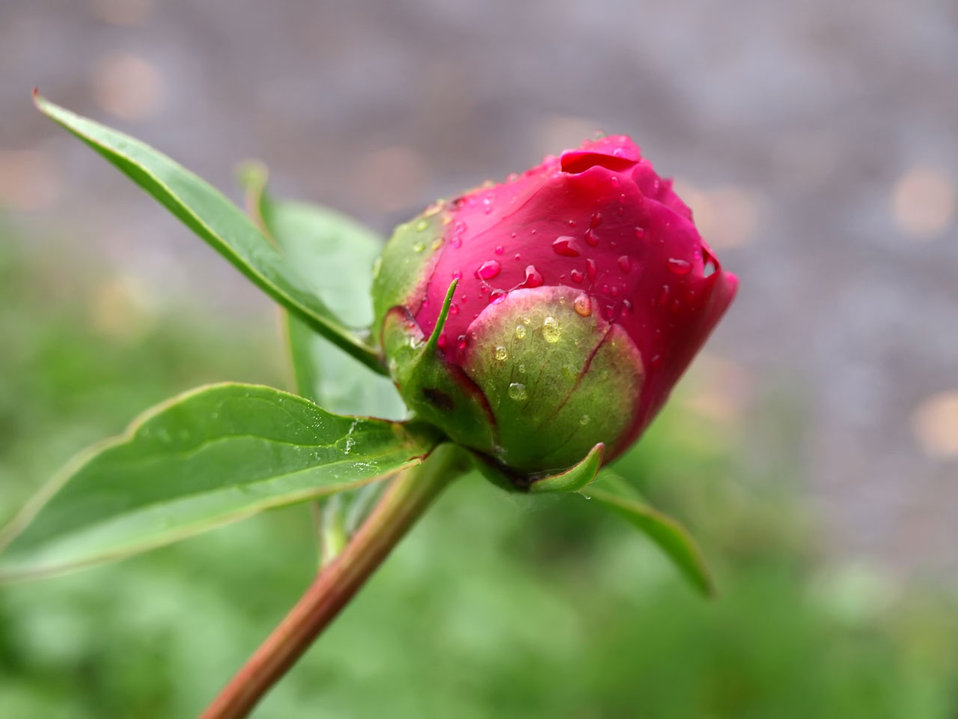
Flower

Peony flower.